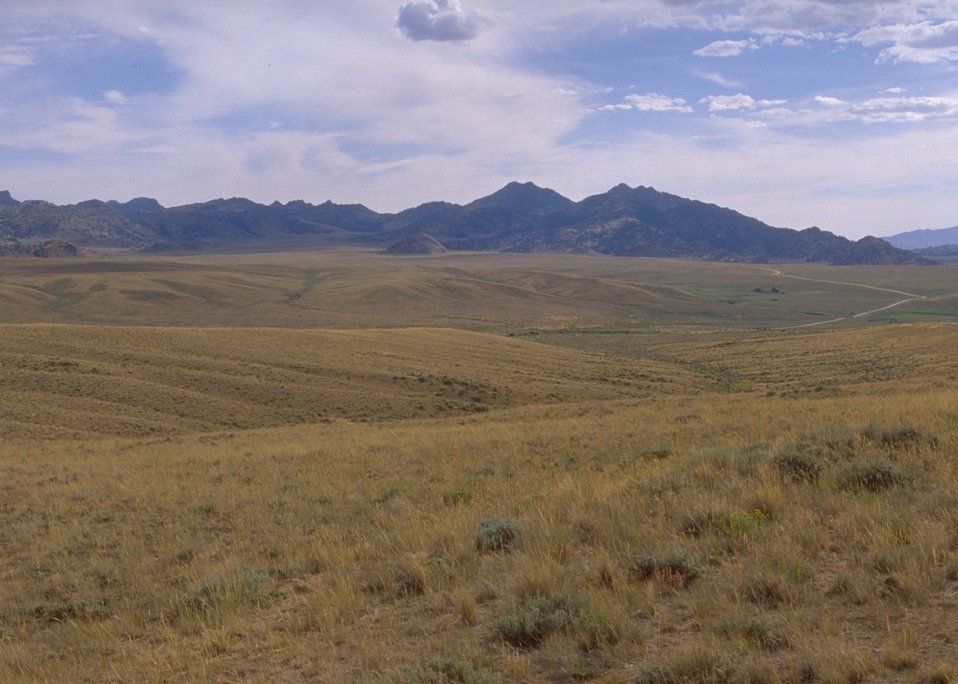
Landscape along the Alcova/Seminoe Back Country Byway, Rawlins Field Office.